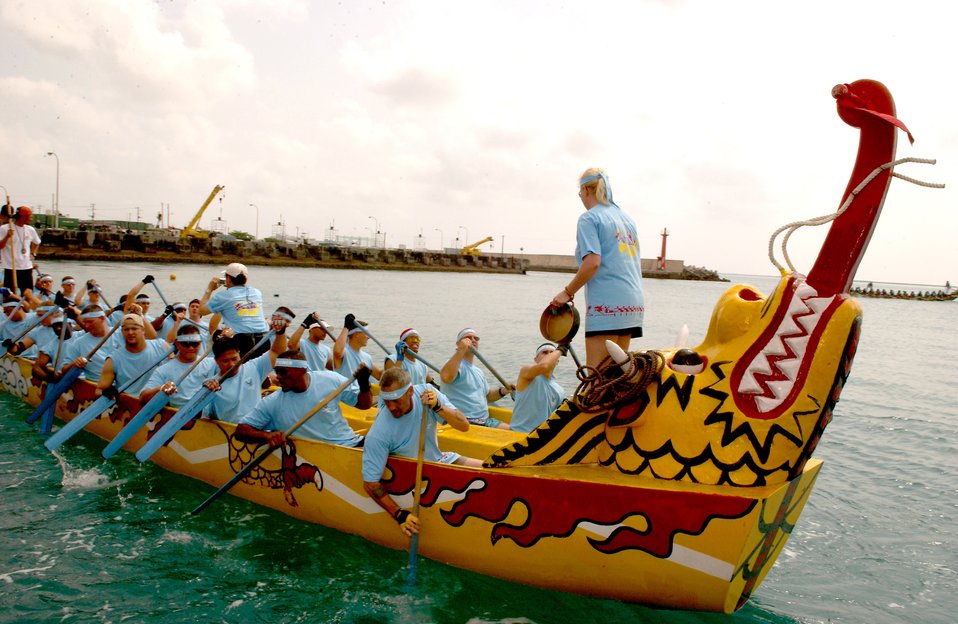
Dragon races

Airmen comprising the